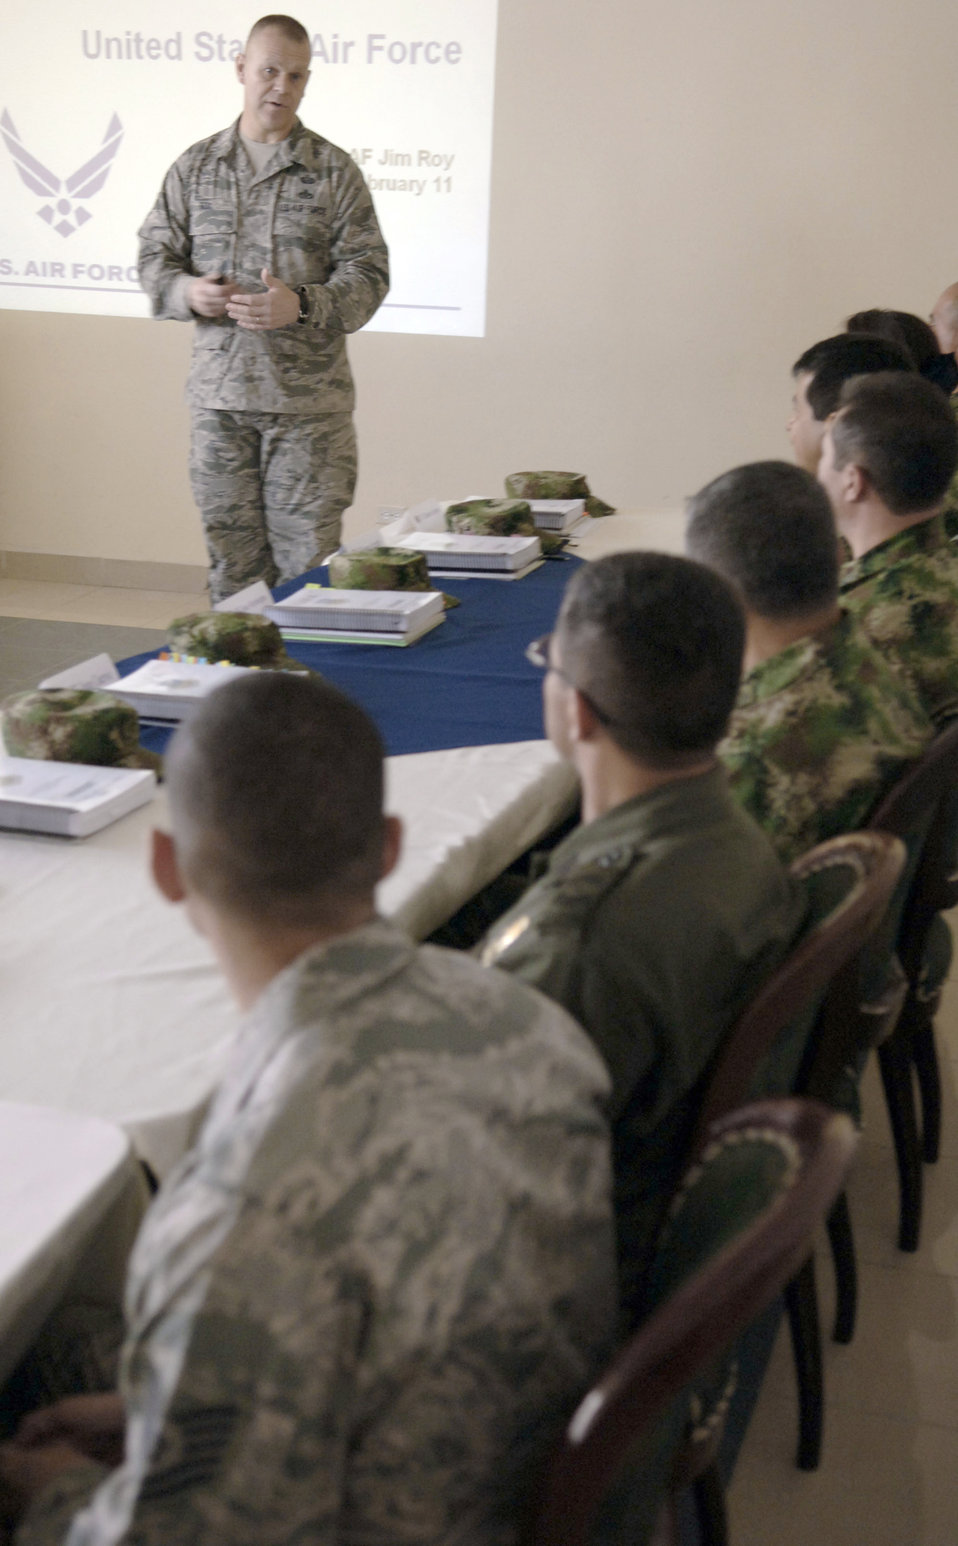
Chief Roy

Chief Master Sgt. of the Air Force James A. Roy discusses the duties of NCOs with students of the International NCO Academy Feb. 2, 2011, in Bogota. The INCOA is a combined professional military education course.